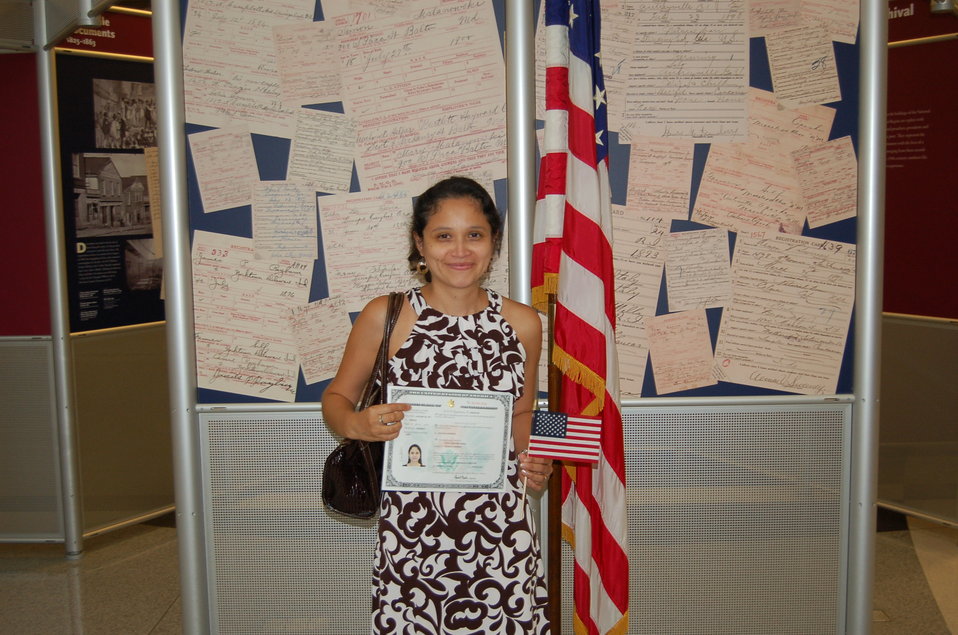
New Citizens